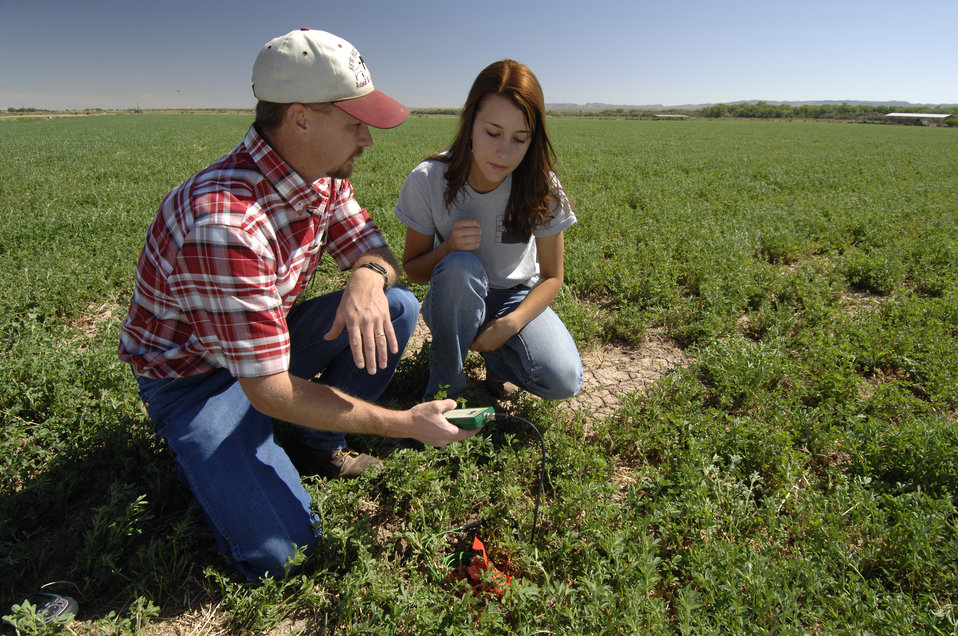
The U.S. Department of Agriculture's (USDA) Cooperative State Research, Education, and Extension Service (CSREES) administers the Rio Grande Basin Initiative (RGBI) in New Mexico in cooperation with the Texas AgriLife Extension Service, Texas AgriLife Research, the College of Agriculture and Life Sciences at Texas A&M University, and New Mexico State University on June 2, 2008. This project addresses water management throughout the Rio Grande Basin, bringing together research, extension, and education efforts to address local, state, regional, national, and international water concerns. Unlike the cement-lined canals that prevent leeching, the earthen acequias allow seepage into groundwater. Acequias are the traditional irrigation ditches or canals in New Mexico. Research has found that the seepage is not wasted but has an added benefit to the environment. The seepage promotes riparian buffers, cleaner groundwater and a more efficient storage of water. The improved irrigation has improved crop production for local farmers.